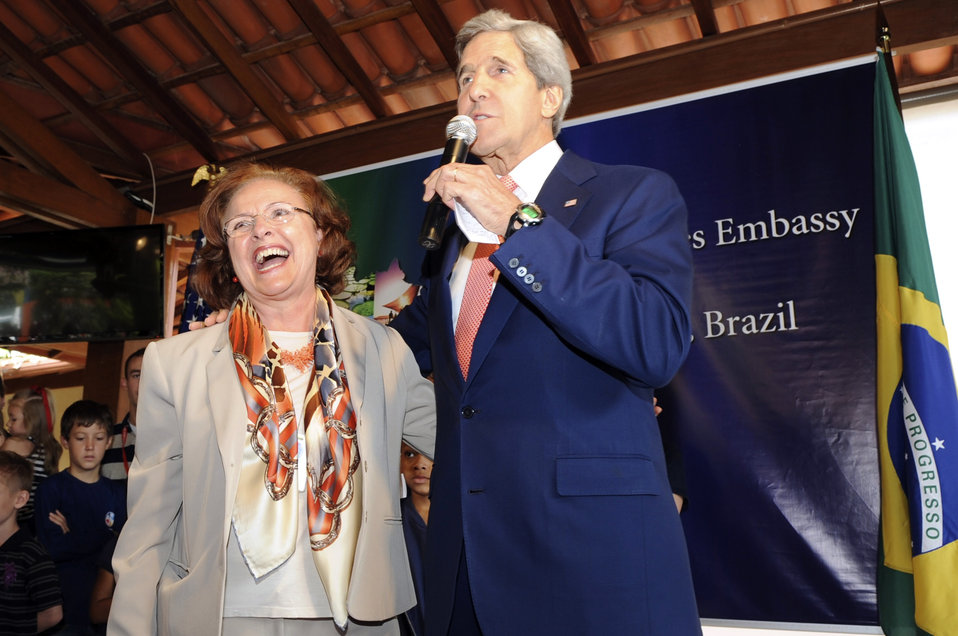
Secretary Kerry Acknowledges a Longtime Brazilian Consulate Employee

U.S. Secretary of State John Kerry laughs with Maria Correia, a 42-year local employee of the U.S. Consulate in Sao Paulo, Brazil, during an address to staff members at the U.S. Embassy in Brasilia on August 13, 2013.